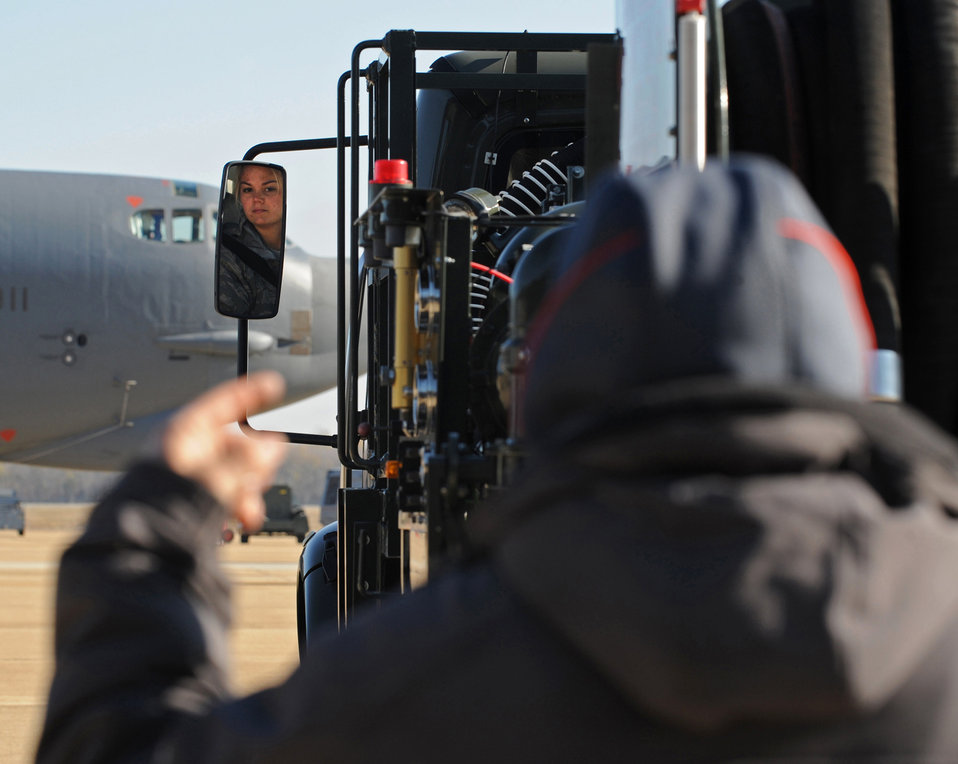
Spotter

Tech. Sgt. David Johnson (foreground) signals Airman 1st Class Rachel Rodgers to back up an R-11 fuel truck Dec. 7, 2011, at Barksdale Air Force Base, La. The 2nd LRS petroleum, oil and lubrication flight manages and distributes fuel for all aircraft and government vehicles on base. Johnson is a 307th Aircraft Maintenance Squadron dedicated crew chief and Rodgers is a 2nd Logistics Readiness Squadron fuel distribution operator.